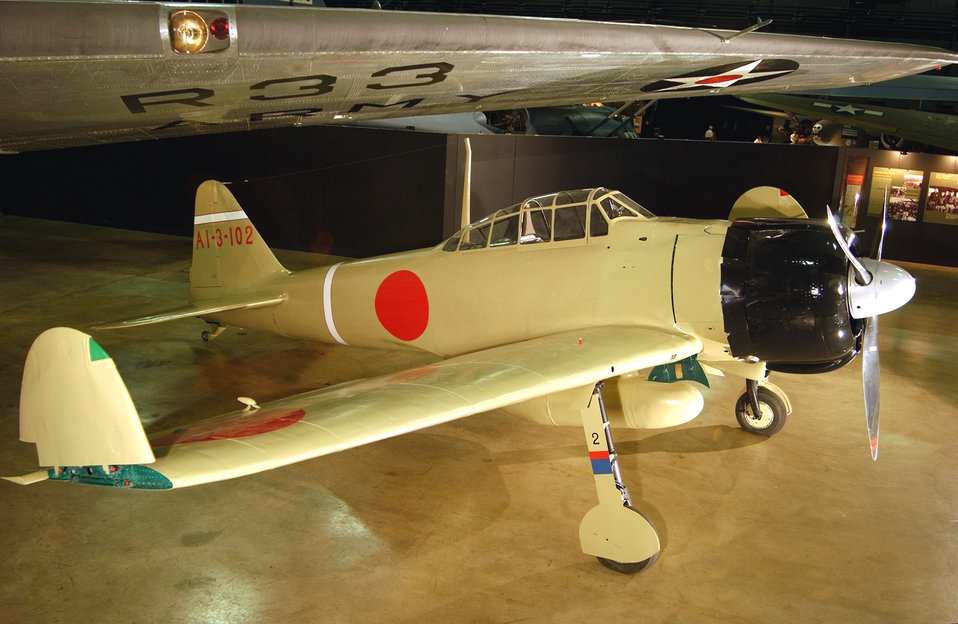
Japanese World War II fighter joins museum collection

DAYTON, Ohio -- The U.S. Air Force Museum's Japanese Zero is on display under the wing of the B-18A in the museum's Air Power Gallery. The gallery chronicles the history of the U.S. Army Air Forces in World War II.